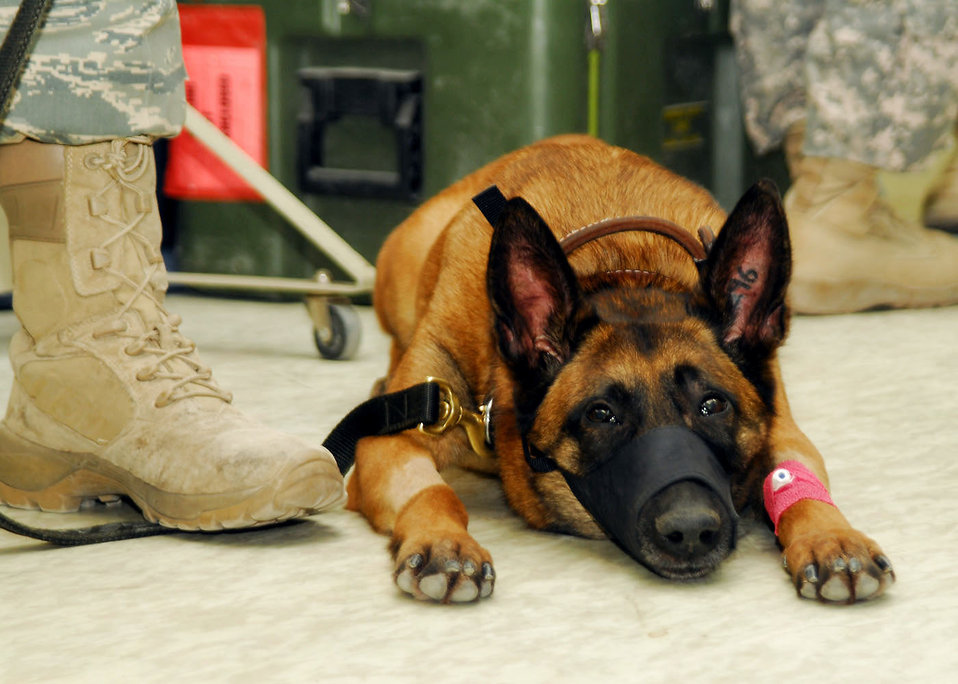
Airmen, Soldiers team up to keep working dog in the fight

Military working dog Kitti awaits her root canal at the feet of her handler, Senior Airman Adam Belward Jan. 15 at an air base in Southwest Asia. Kitti's operation required the collaboration of both an Air Force dentist and an Army veterinarian. Airman Belward is assigned to the 822nd Security Forces Squadron.